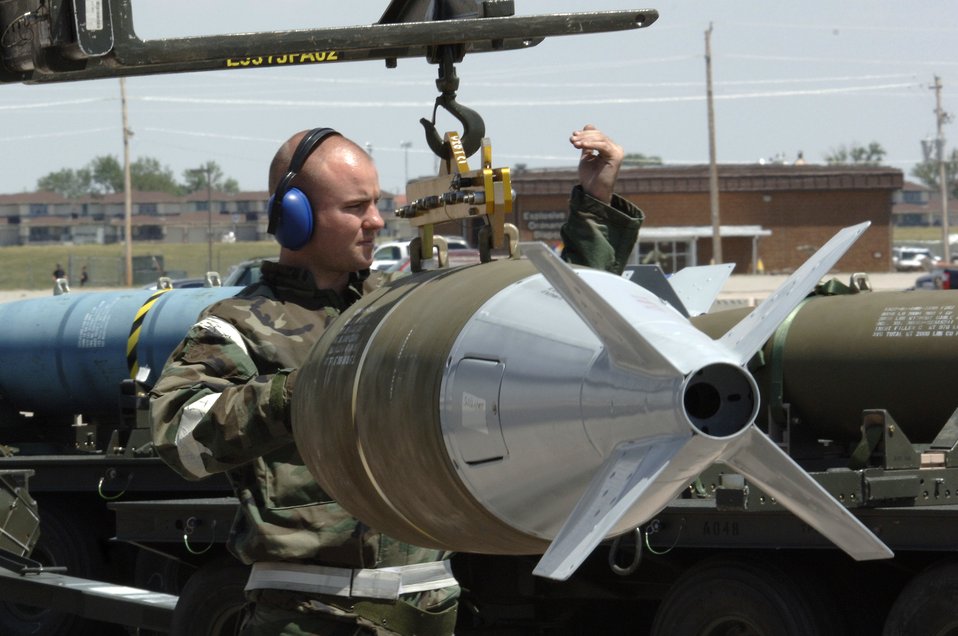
Badlands Express

Senior Airman Ryan McGlocklin directs a bomb loader into position underneath a training bomb at Ellsworth Air Force Base, S.D., on Monday, June 26. The base is conducting Exercise Badlands Express 06-04 to prepare for an operational readiness inspection in July. Airman McGlocklin is assigned to the 28th Aircraft Maintenance Squadron.